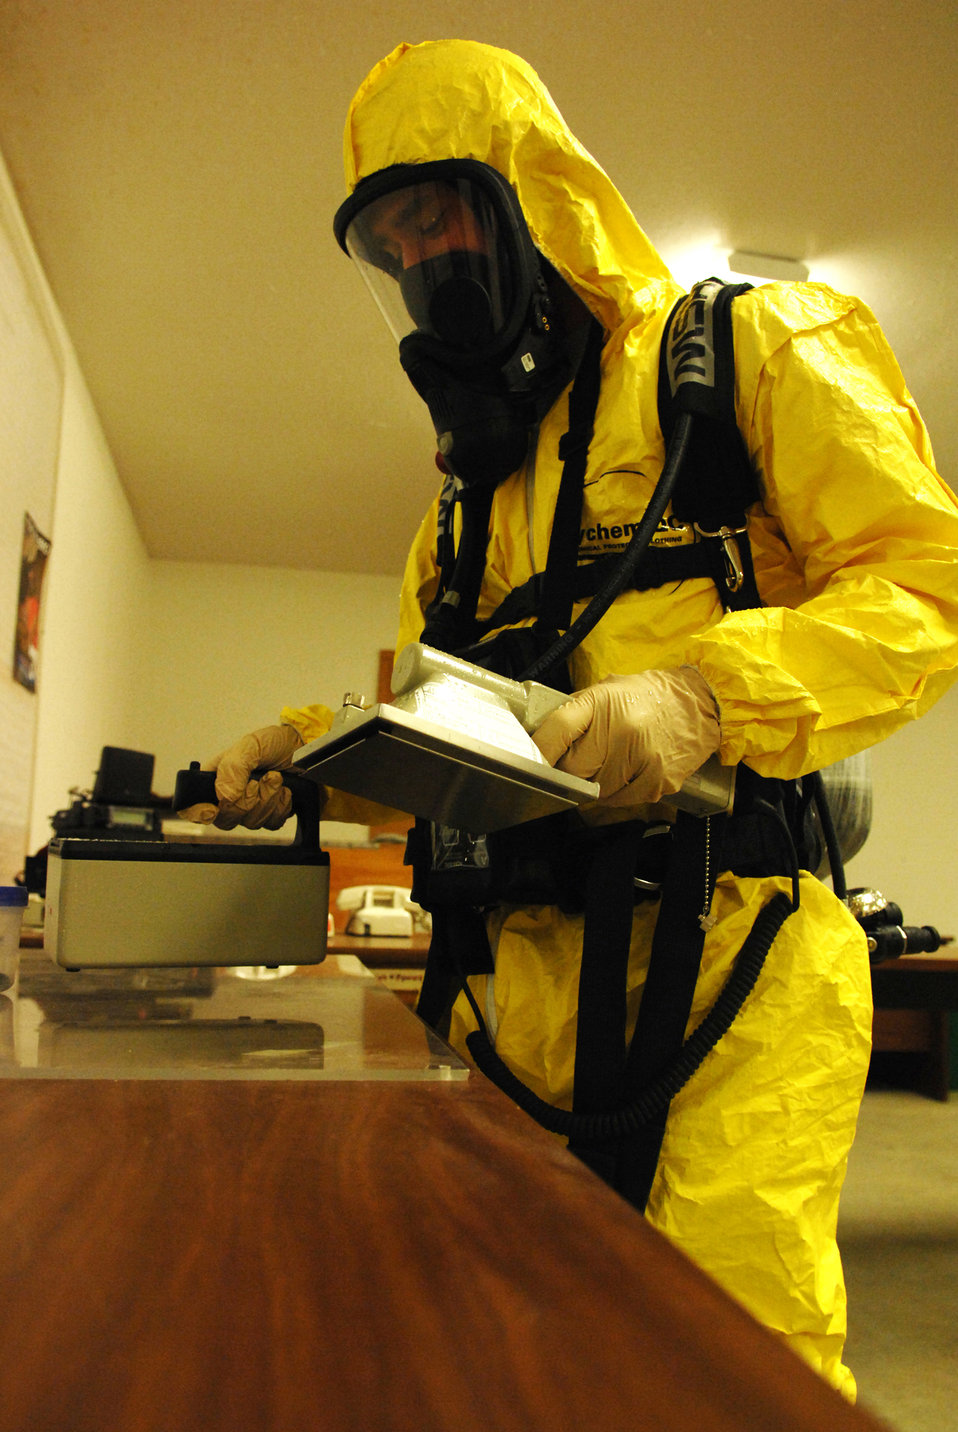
Find the hidden clue

Airman 1st Class Brian Stevens scans for radiation levels June 3, 2010, during a training exercise for Air Combat Command's Chemical, Biological, Radiation and Nuclear Equipment Challenge at Minot Air Force Base, N.D. The Airman is an emergency management technician with the 5th Civil Engineer Squadron.